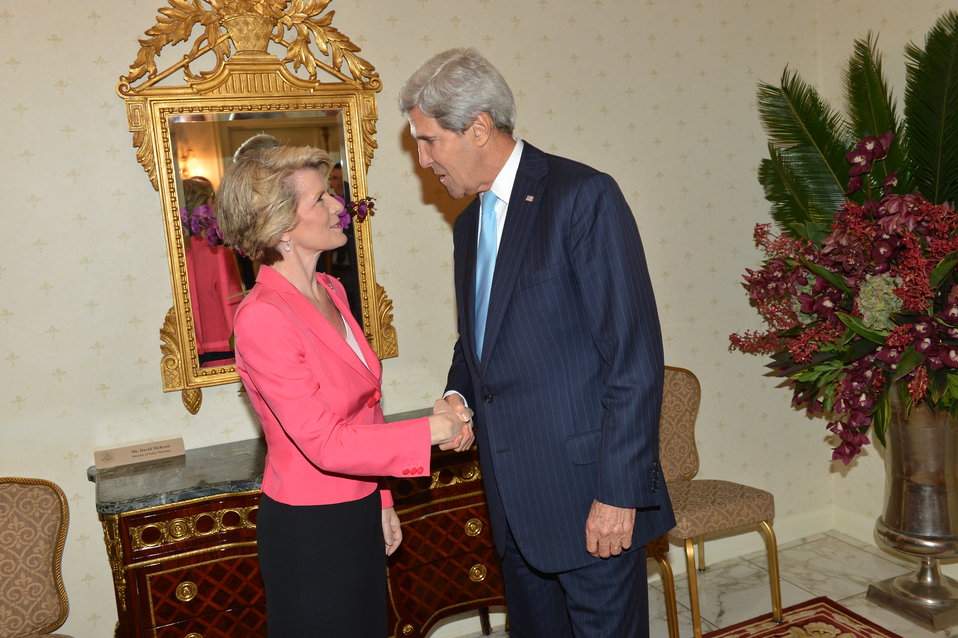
Secretary Kerry and Australian Foreign Minister Bishop

U.S. Secretary of State John Kerry meets with Australian Foreign Minster Julie Bishop in New York City on September 27, 2013.